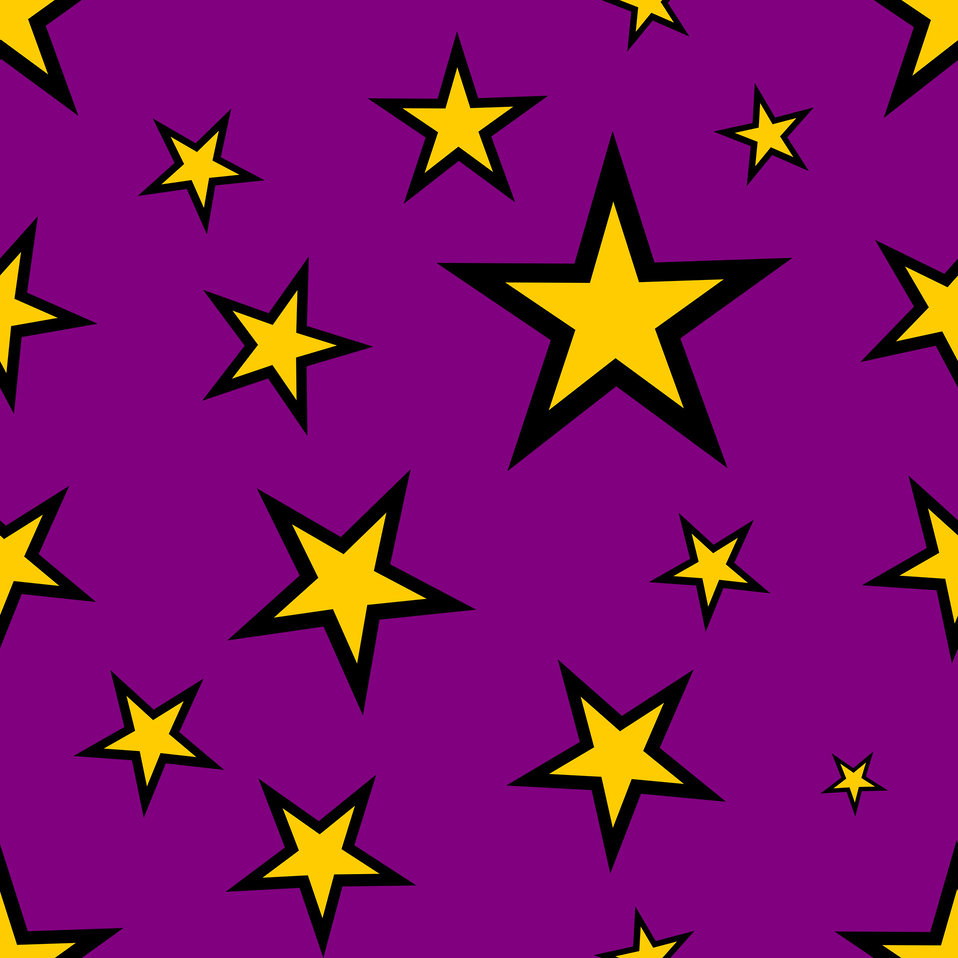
Seamless pattern 1

A seamless pattern..